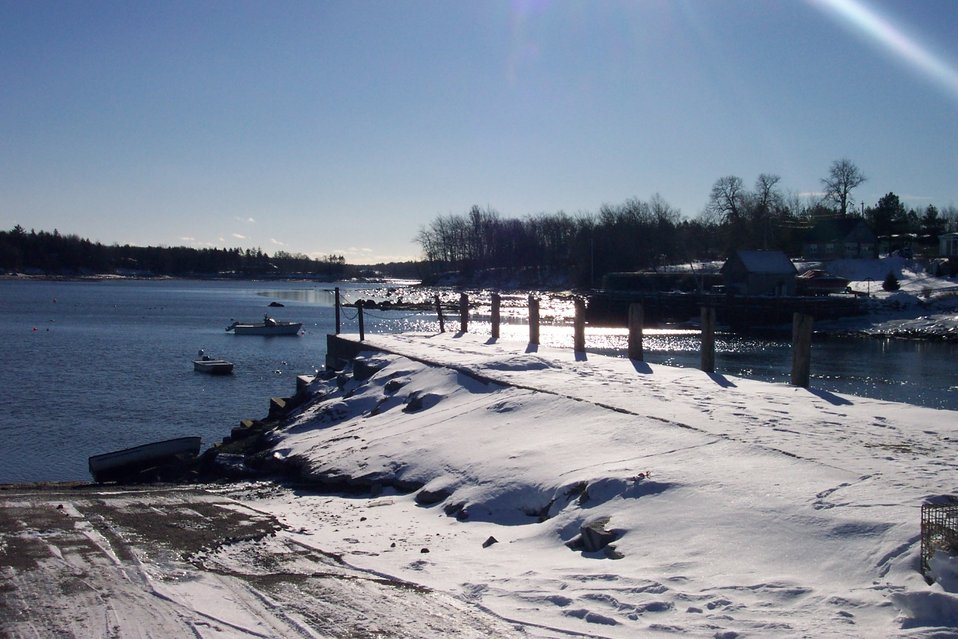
The boat ramp at South Thomaston on a bright January day.